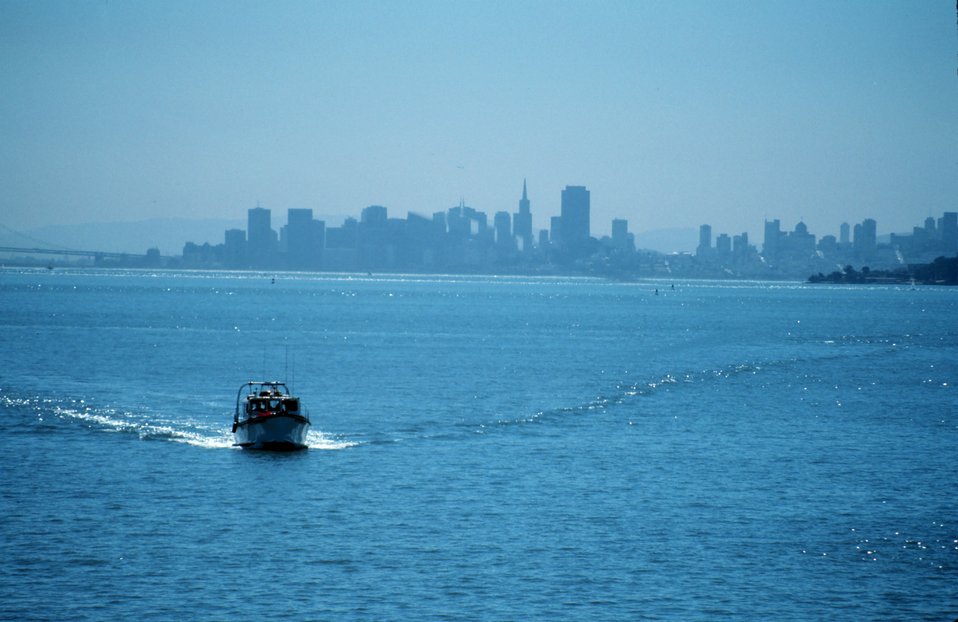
San Francisco skyline looking southwest from the center of the bay.